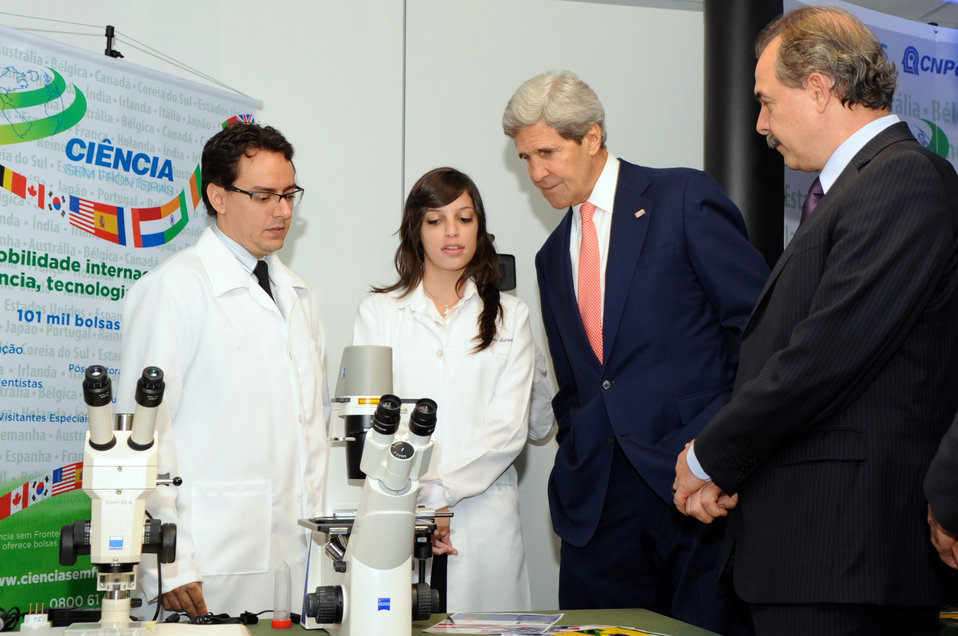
Secretary Kerry Views a Brazilian Science Exhibition

Two university students explain their microscope exhibit as U.S. Secretary of State John Kerry and Brazilian Minister of Education Aloizio Mercadante tour a science exhibition in Brasilia, Brazil, on August 13, 2013.